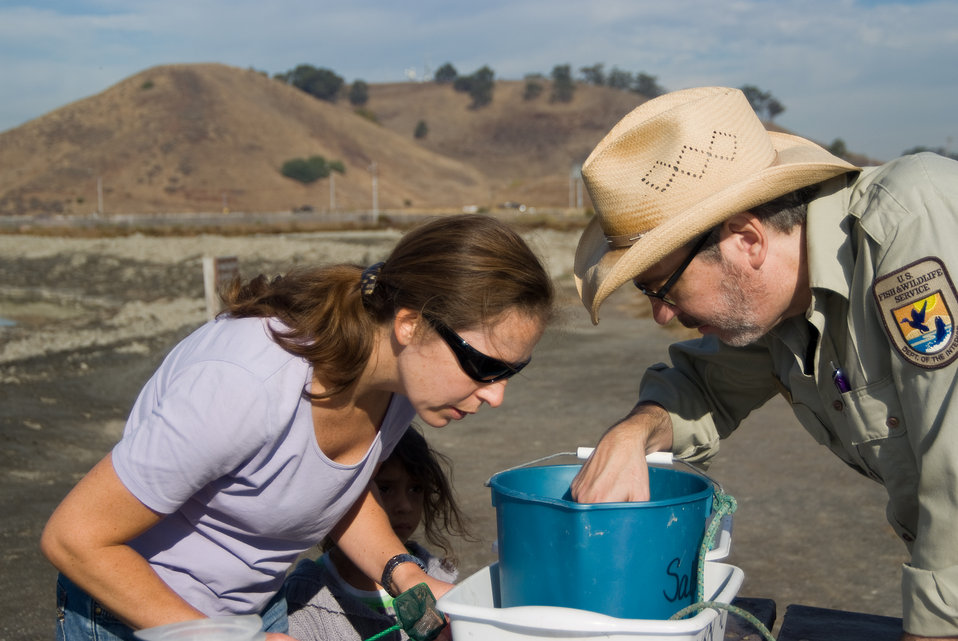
Looking at nature up close

Don Edwards San Francisco Bay National Wildlife Refuge